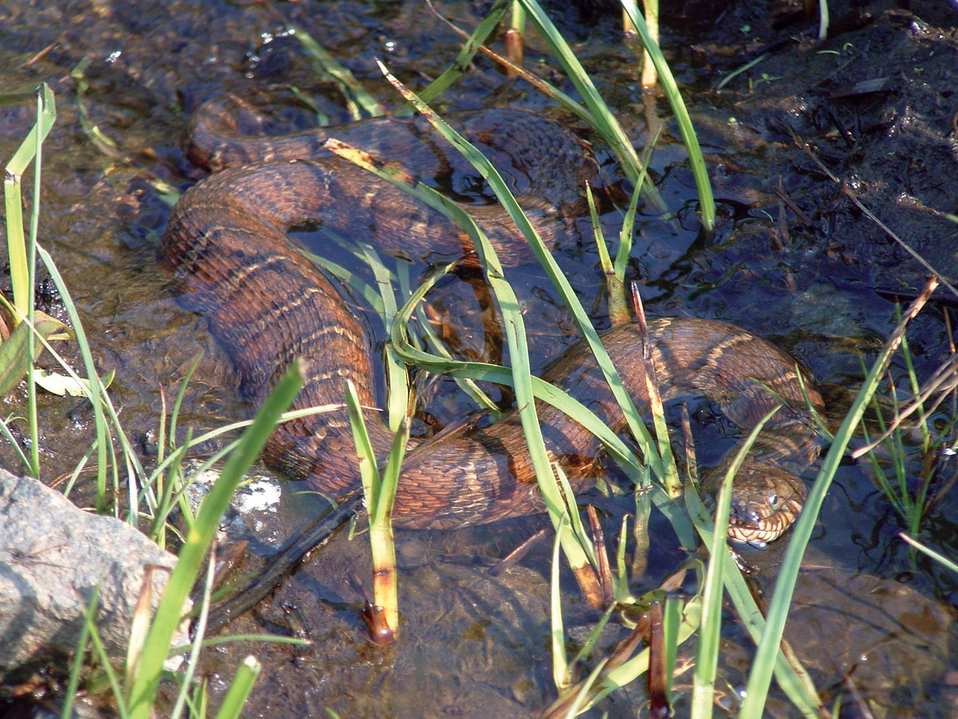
Photo of the Week - Watersnake (VA)

Photo of the Week - 10/01/11

Watersnake photographed at Rappahannock River Valley National Wildlife Refuge in Warsaw, VA.